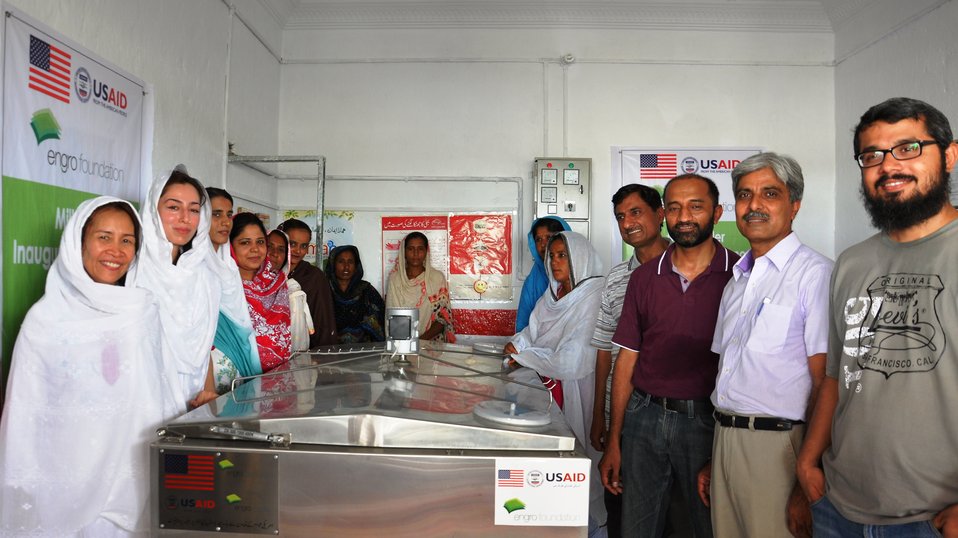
USAID, Engro to install Milk Chillers in Sindh, Punjab

Ms. Maryam Riaz, USAID and Ms. Agnes Luz, Chief of Party Entrepreneurs along with the Dairy farmers and Engro Management at the Inauguration of Milk Chiller Ceremony, Village Bagi near Moen Jo Daro, Sindh.